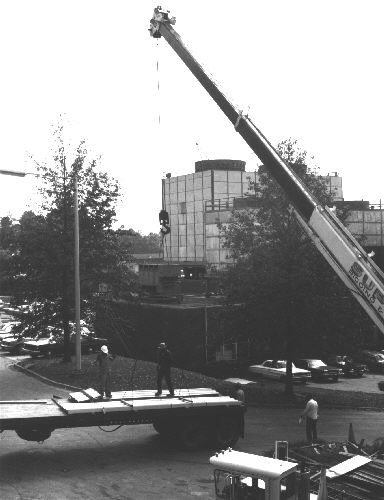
Construction of CDC's Maximum Containment Laboratory.